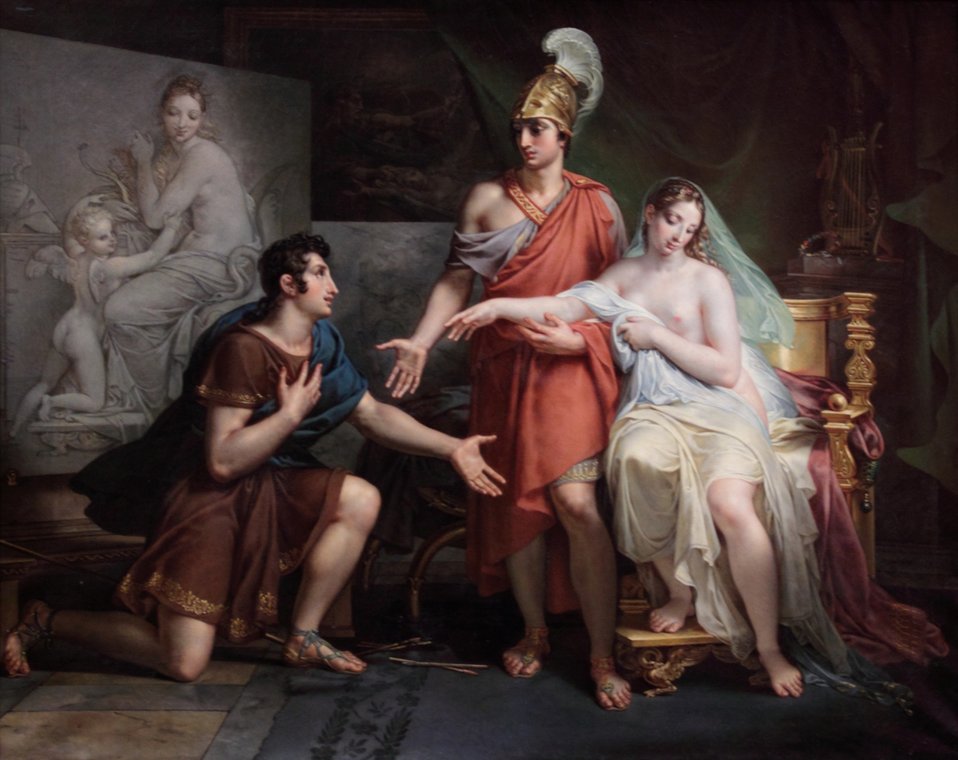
Alexandre le Grand cédant Campaspe à Apelle